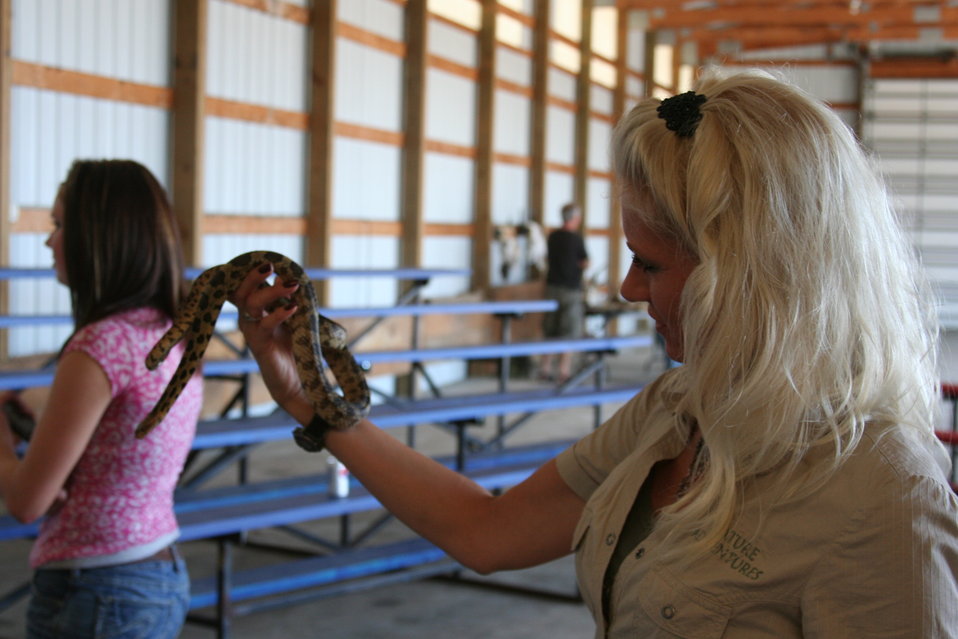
2011 Huron Prairie Fest

Nature Adventures star Terri, teaches the audience why not to be afraid of snakes, reptiles, and amphibians.